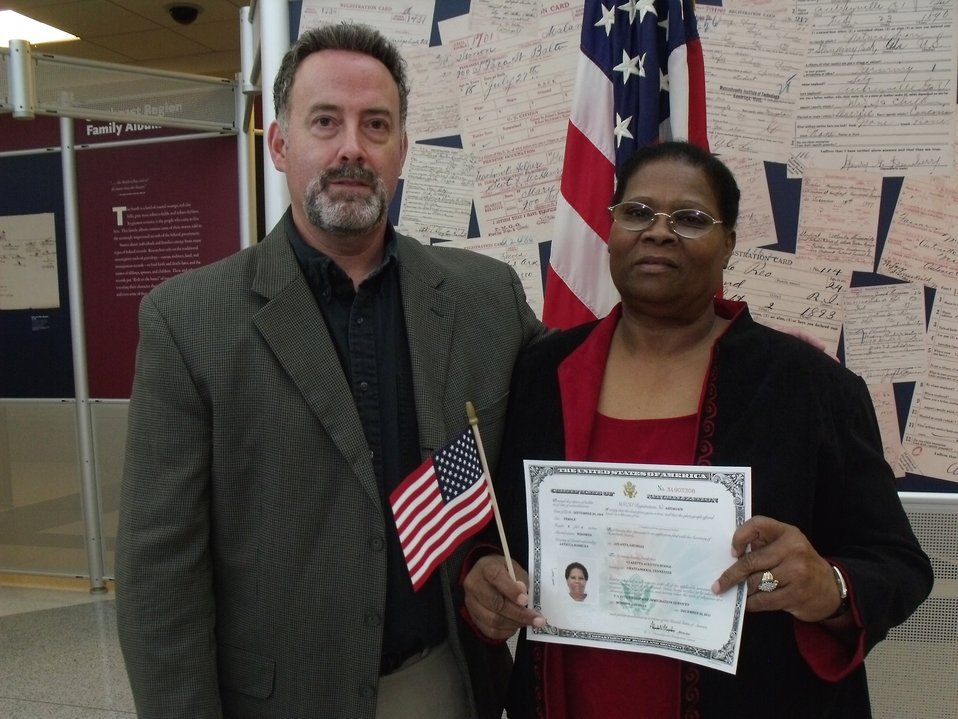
New Citizens